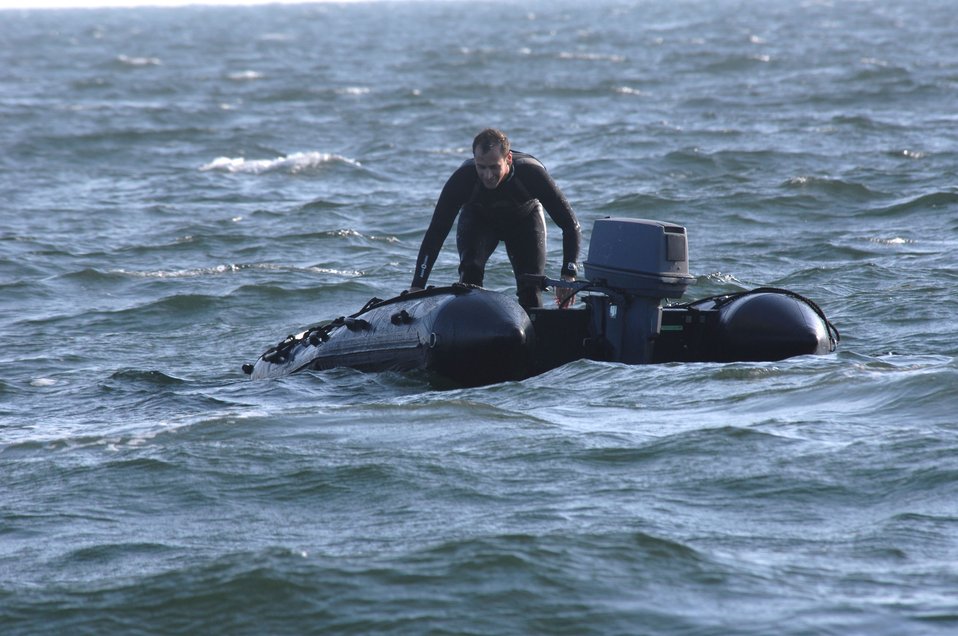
Commando Angel preps pararescuemen

A pararescueman prepares a raft for a survivor during a crash recovery scenario March 22 in the Gulf of Mexico. He is assigned to the 38th Rescue Squadron from Moody Air Force Base, Ga., and is taking part in the base's operational readiness exercise, Commando Angel.